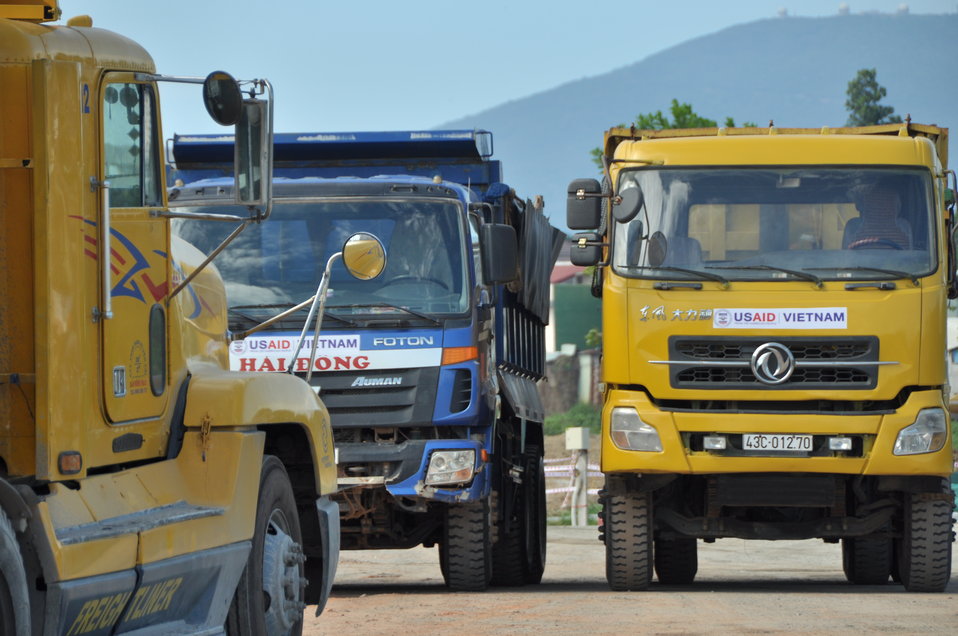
Site construction at the Environmental Remediation of Dioxin Contamination at Danang Airport

Progress at the Danang Airport remediation site
April 23, 2013